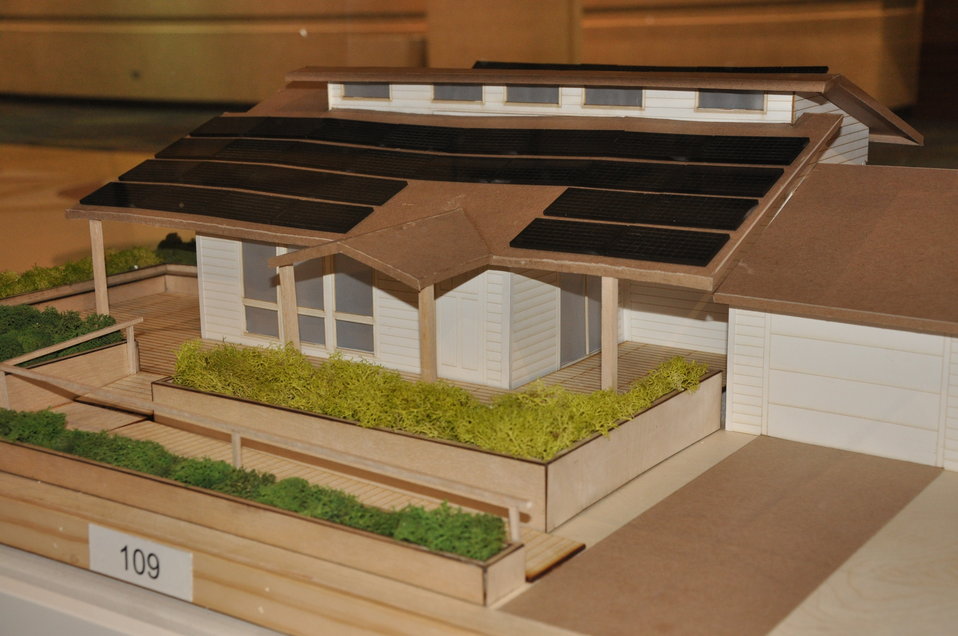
Purdue University